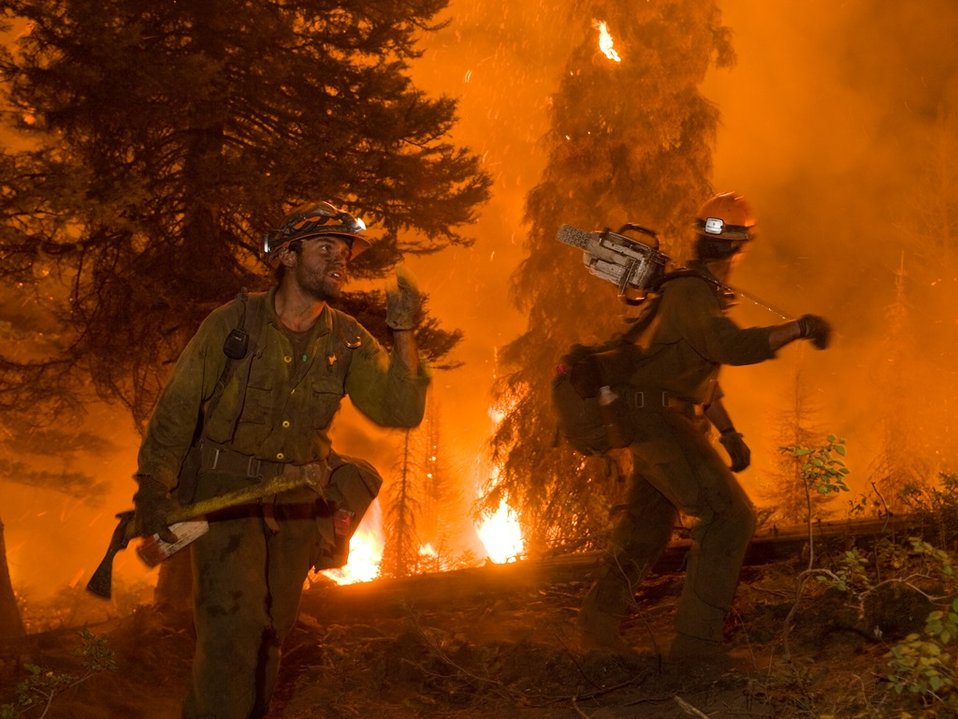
The Springs Fire, Banks-Garden Valley, Idaho, Boise National Forest, August, 2012

U.S. Forest Service (USFS) firefighters battle to control the wildland fire at The Springs Fire, Banks-Garden Valley, Idaho, Boise National Forest, in August 2012.